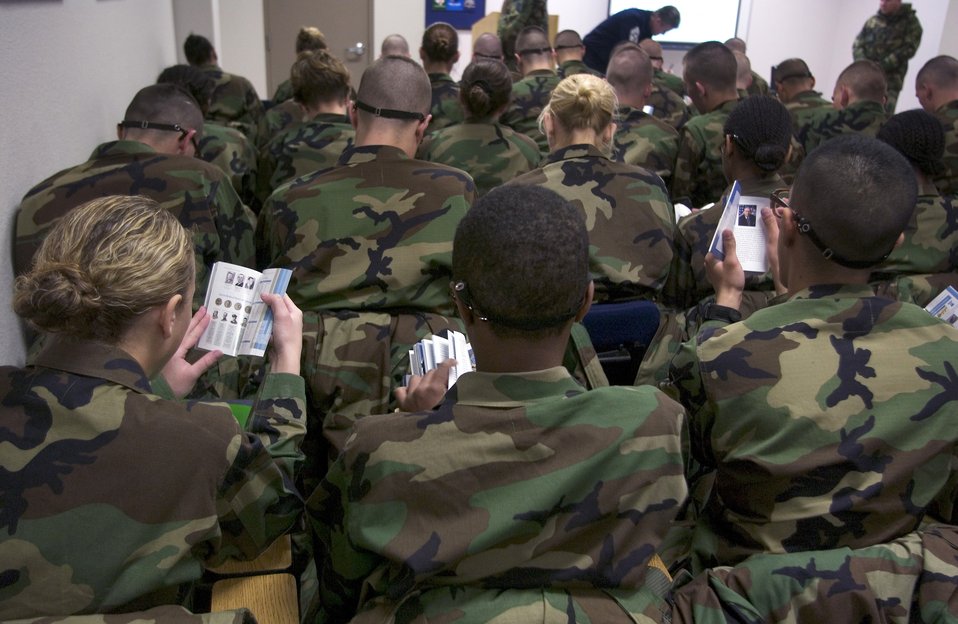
Chief Murray launches 'handbook' program

LACKLAND AIR FORCE BASE, Texas -- Air Force trainees review their new Airman handbooks after Chief Master Sgt. of the Air Force Gerald R. Murray presented them to the Airmen of the 326th Training Squadron here. The handbook is a pocket-sized book that covers heritage, national leaders, Air Force operations and a variety of military-related topics. A copy is being provided to every new Airman.